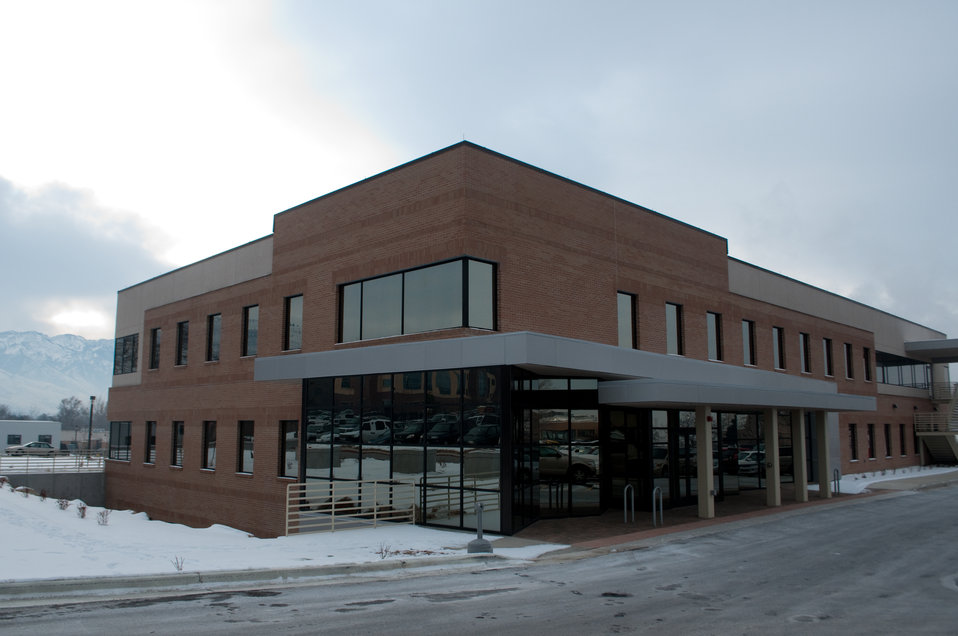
Salt Lake City Veterans Affairs Outpatient Mental Health Clinic

SALT LAKE CITY (Jan. 7, 2011) – The front entrance of the new $6.3 million Salt Lake City Veterans Affairs Outpatient Mental Health Clinic here is located on the second floor. The three-story facility, part of the George E. Wahlen Department of Veterans Affairs Medical Center, is scheduled to open in March and includes 77 staff offices, seven group rooms, two lounges and kitchen rooms and a social room. Construction of the facility was managed by the U.S. Army Corps of Engineers Sacramento District.